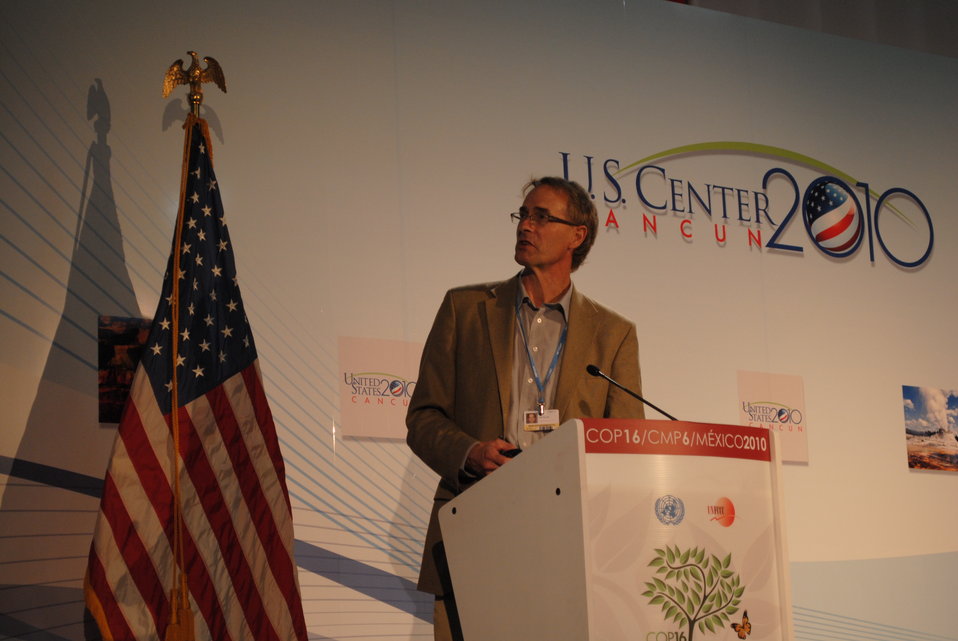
Dr. Keith Paustian Addresses the U.S. Center

Dr. Keith Paustian of Colorado State University addresses the U.S. Center at COP-16 in Cancun, Mexico, on December 8, 2010.